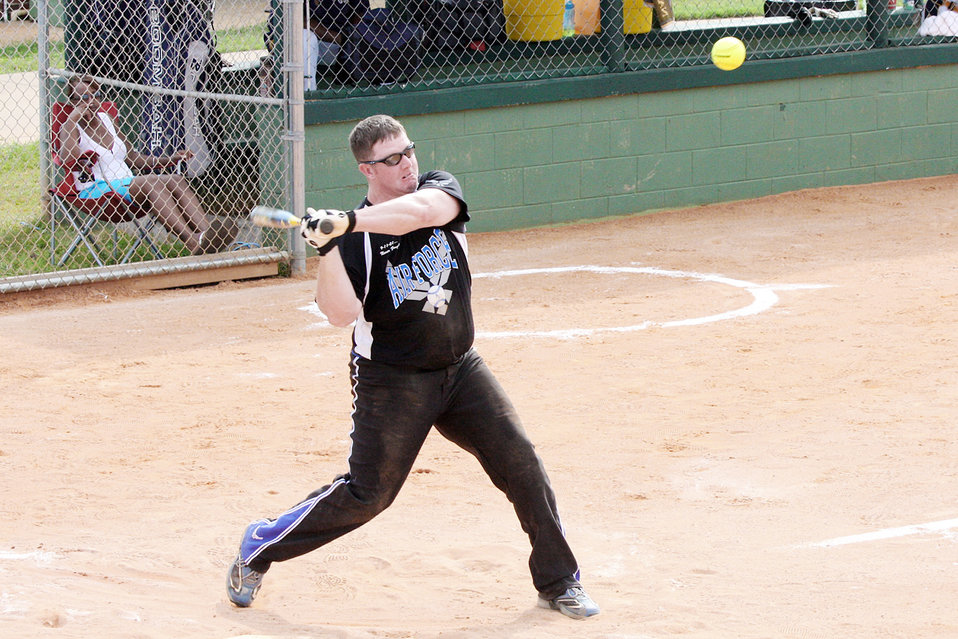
Air Force teams earn gold medals at armed forces softball championships

Joshua Wiggs crushes a home run during the Armed Forces Softball Championships Sept. 29, 2009 at Naval Air Station Pensacola, Fla. The Air Force men's and women's softball teams earned gold medals at the event. Wiggs is from Tyndall Air Force Base, Fla.